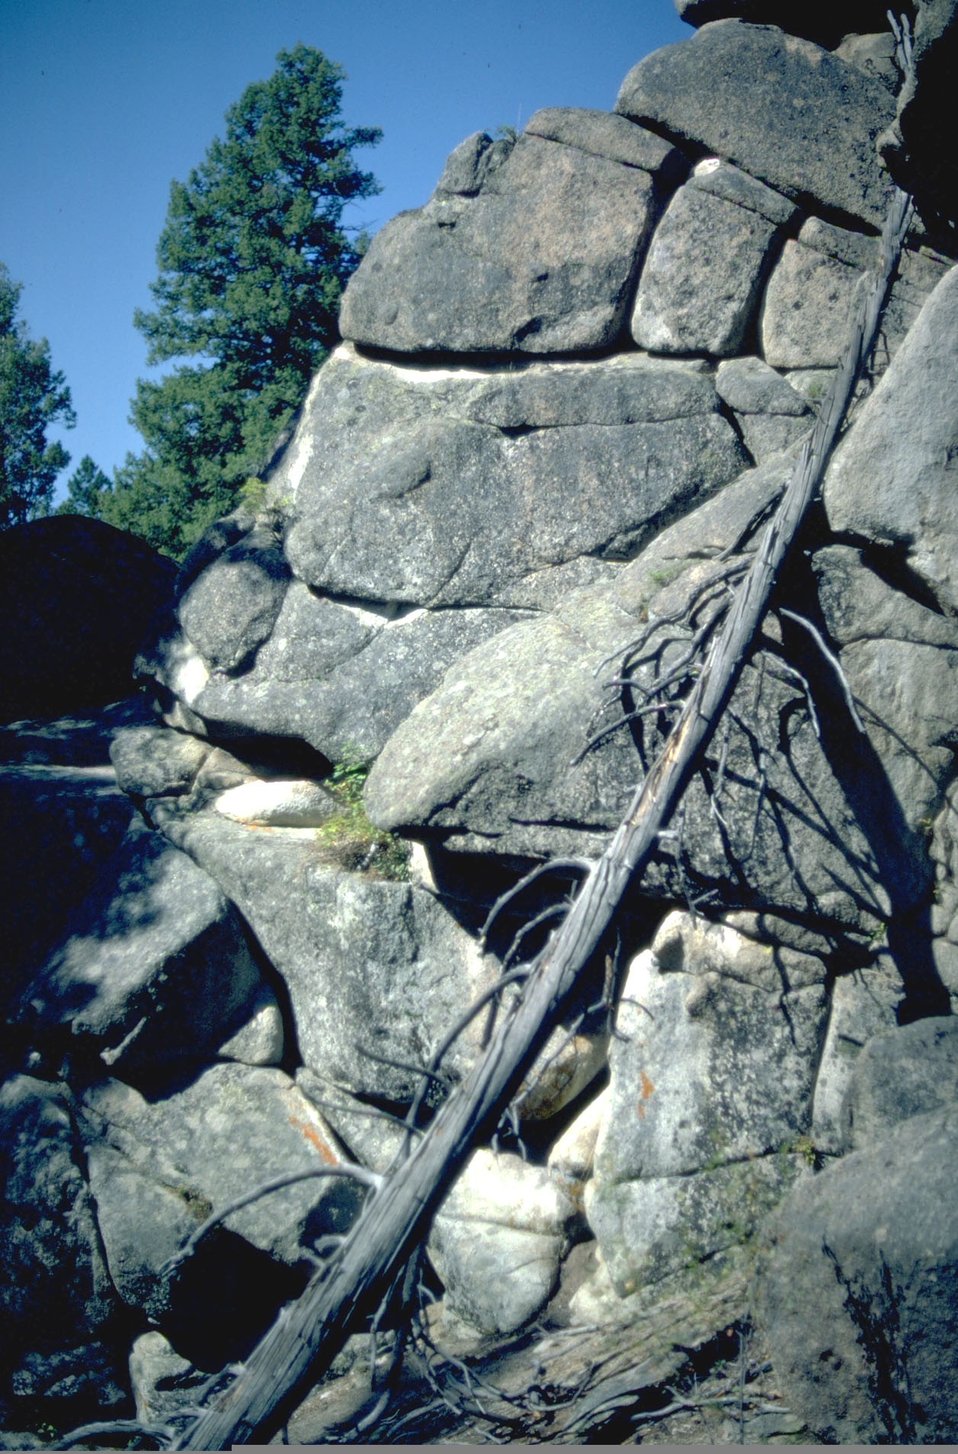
Humbug Spires